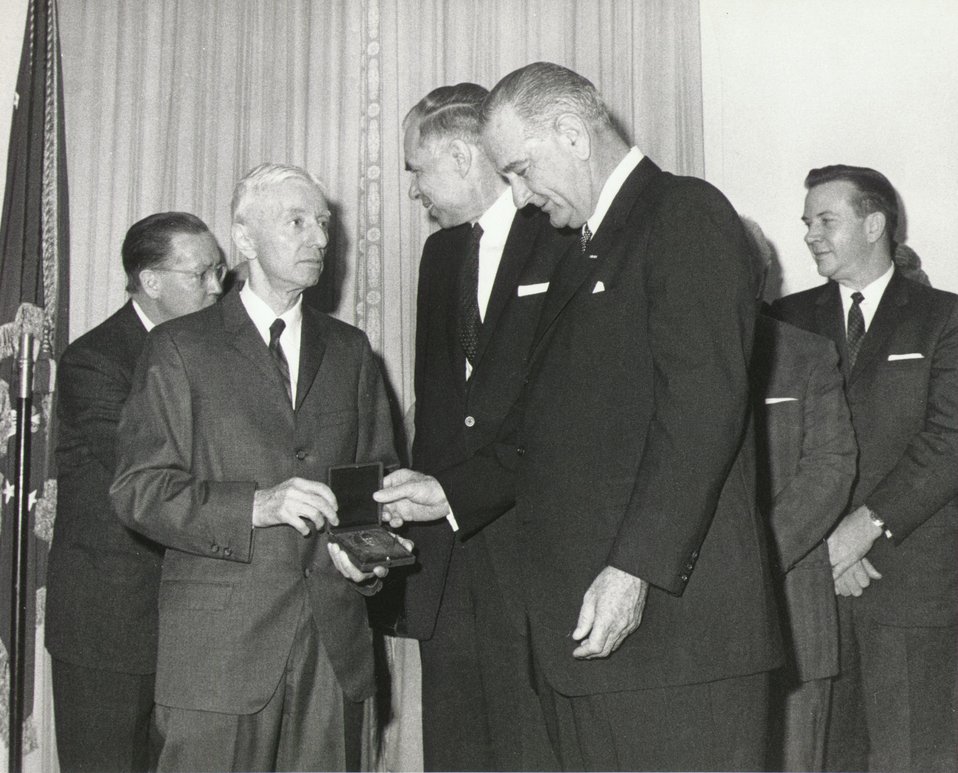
Fermi Award. Recipient: Rickover. Date: 1964.